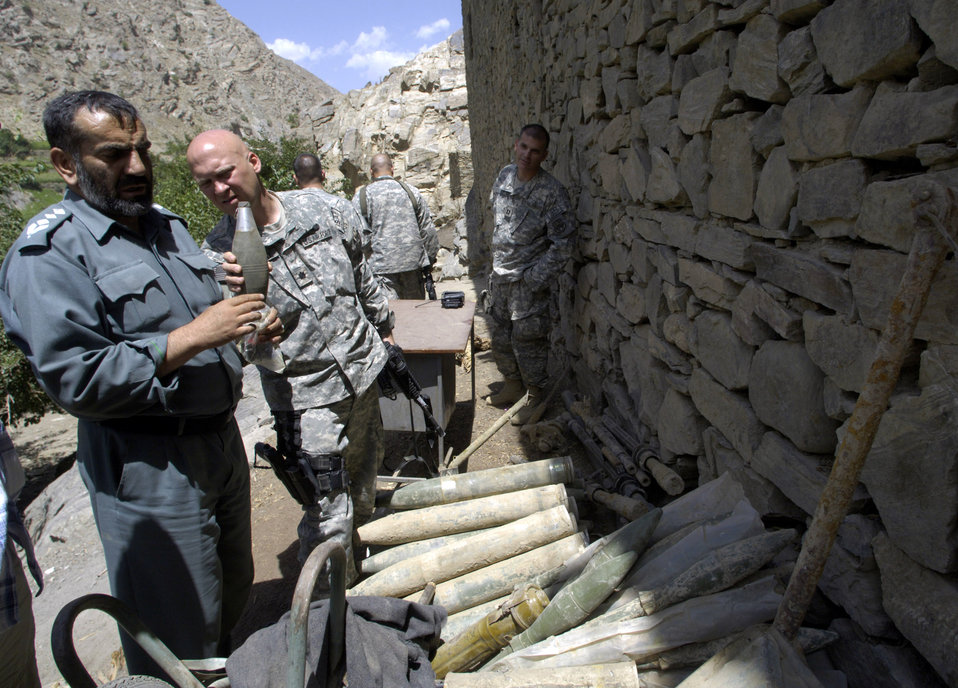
Panjshir PRT

Panjshir Provincial Reconstruction Team commander Lt. Col. Christopher Luedtke looks over a weapons cache Aug. 5 with district police chief Khalil Rhman. The cache was uncovered during recent flooding in the province's Dara district on the site of a medical center expansion project. Colonel Luedtke was in Dara to meet the new police chief and discuss security concerns in the strategically important district. The police chief took control of the weapons cache after it was uncovered and assured the PRT commander the weapons would be safely disposed of. Colonel Luedtke is deployed from Hill Air Force Base, Utah. Since its inception in 2005, the PRT has coordinated with the Panjshir government on more than $30 million in development projects, including a paved road and bridge infrastructure, new schools and government centers, a radio broadcasting system and a printing press.